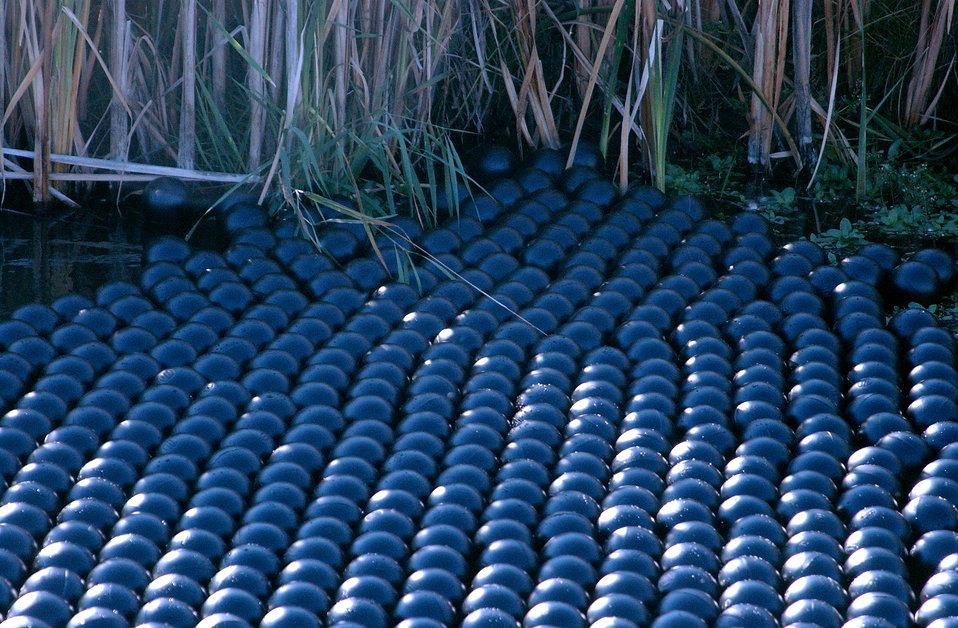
Bird balls

FAIRCHILD AIR FORCE BASE, Wash. -- In a new test to prevent airfield bird strikes here, small, environmentally safe balls cover a drainage ditch, blocking ultraviolet rays and preventing plant growth. This makes the ditch less desirable for birds to roost in.